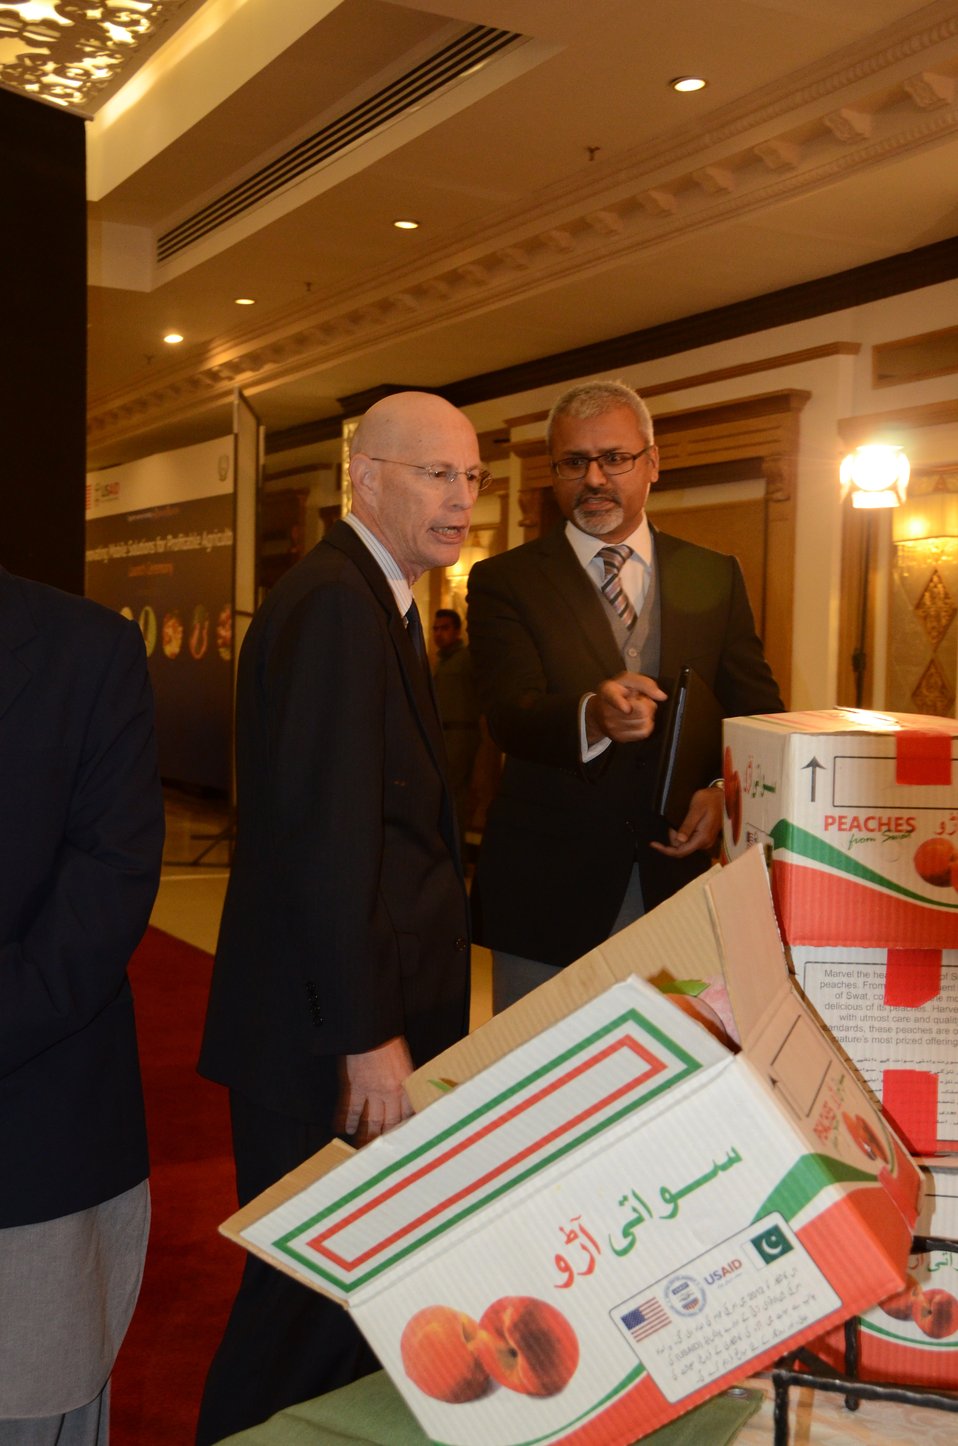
Gregory Gottlieb Mission Director USAID with Farrukh Mehboob Khan Acting Chief of Party USAID Firms Project checking tools and packaging provided by the project to partner peach farmers